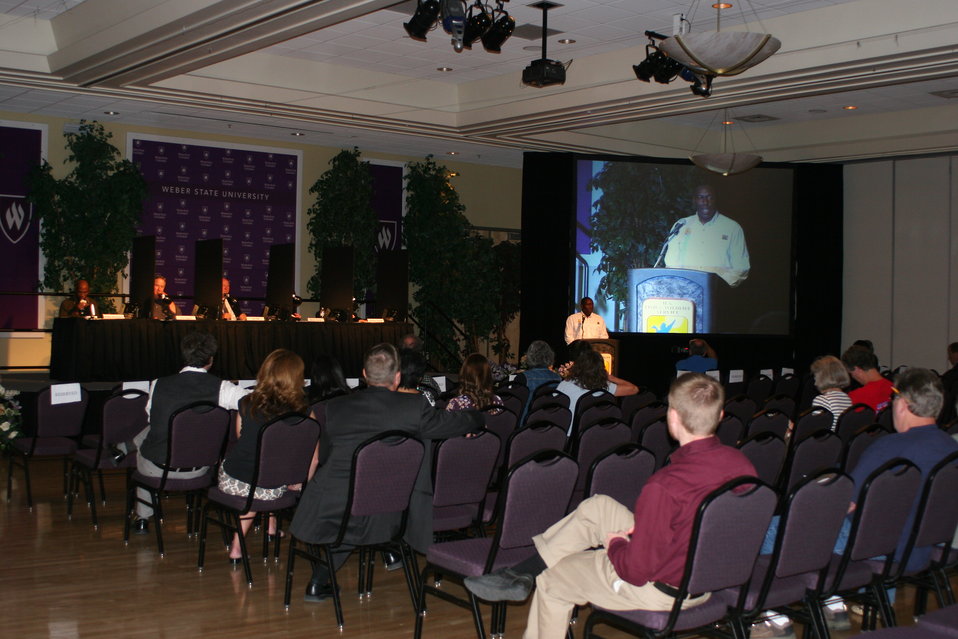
Day 2 Opening Remarks

Photo Credit: Suzanne Fellows / USFWS
The U.S. Fish & Wildlife Service sponsored the 2012 Federal Duck Stamp Art Contest September 28 and 29 in Ogden, Utah, at Weber State University. A panel of five judges was responsible for choosing the art work used to design the 2013-2014 Migratory Bird Hunting and Conservation Stamp.